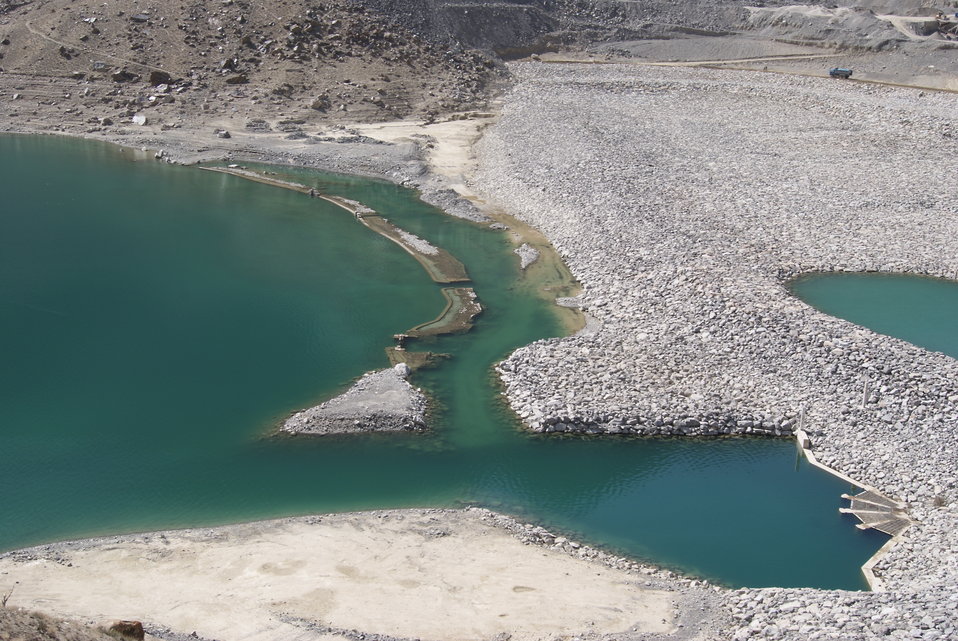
Satpara